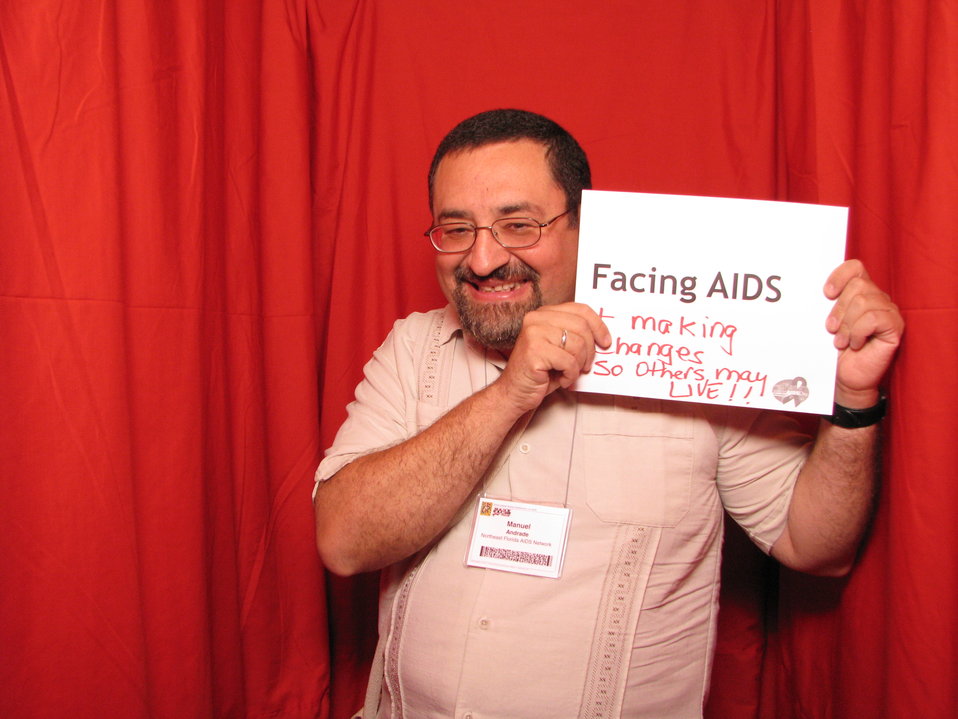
FACING AIDS and making changes so others may live!!

From the AIDS.gov photo booth at the U.S. Conference on AIDS, September 2010 (Orlando, FL).